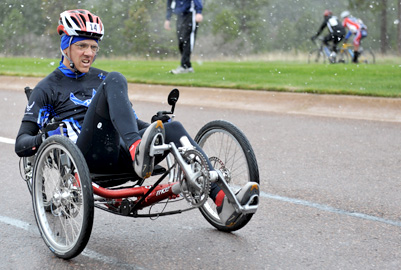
Application deadline approaching for Warrior Games

The application deadline for the 2011 Warrior Games is Jan. 11. With the holidays approaching, Air Force officials encourage qualifying Airmen to submit applications as soon as possible.